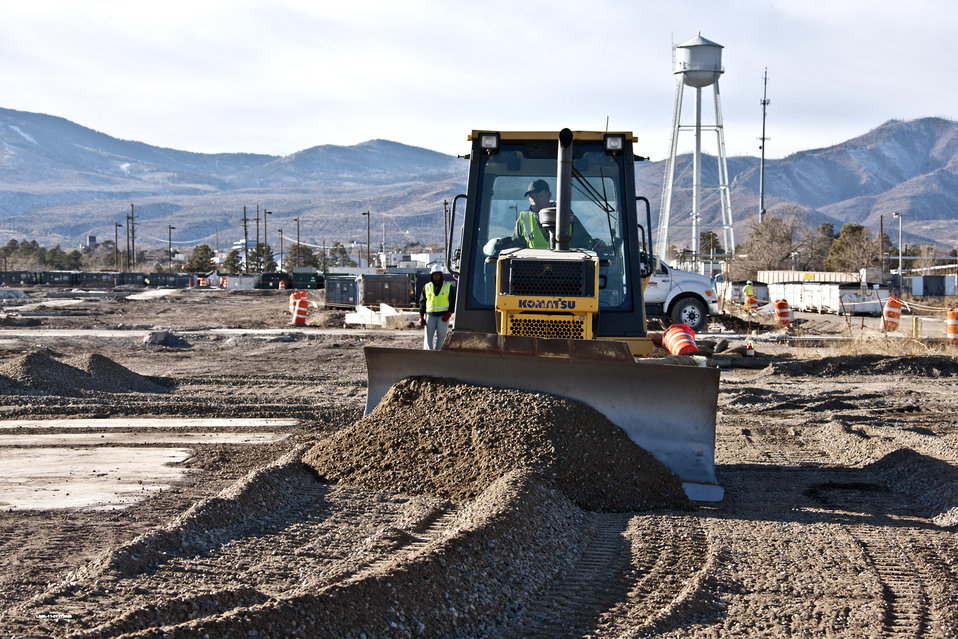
A Safe End to Cold War Facilities

When demolition was complete, crews spread fresh soil at DP West.